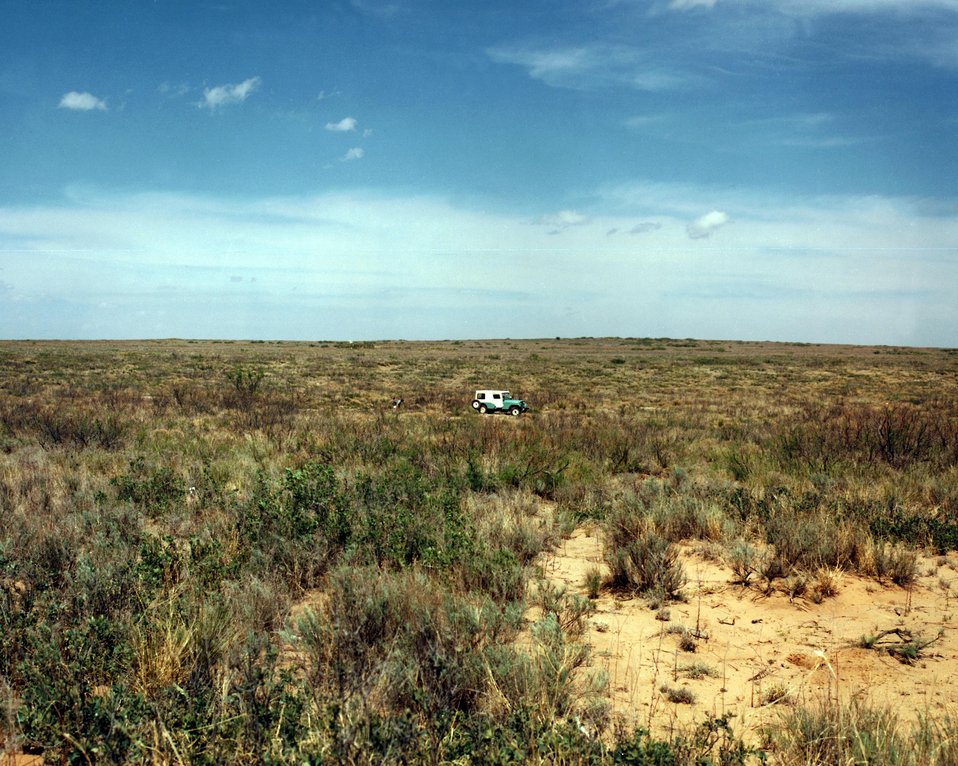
VIEW OF THE TERRAIN IN S.E. NEW MEXICO.

THE WASTE ISOLATION PILOT PLANT IS A DOE RESEARCH AND DEVELOPMENT FACILITY FOR DEMONSTRATING THE SAFE DISPOSAL OF TRANSURANIC RADIOACTIVE WASTES. TEST SHAFTS HAVE BEEN DRILLED TO A DEPTH OF 2,100 FEET. THE SHAFTS, ONE 6 FEET IN DIAMETER AND THE OTHER 12 FEET IN DIAMETER, PROVIDE AN ENTRY PASSAGE AND VENTILATION TO THE UNDERGROUND SALT ROCK FORMATION THAT IS BEING TESTED TO DETERMINE ITS SUITABILITY FOR RADIOACTIVE WASTE STORAGE.